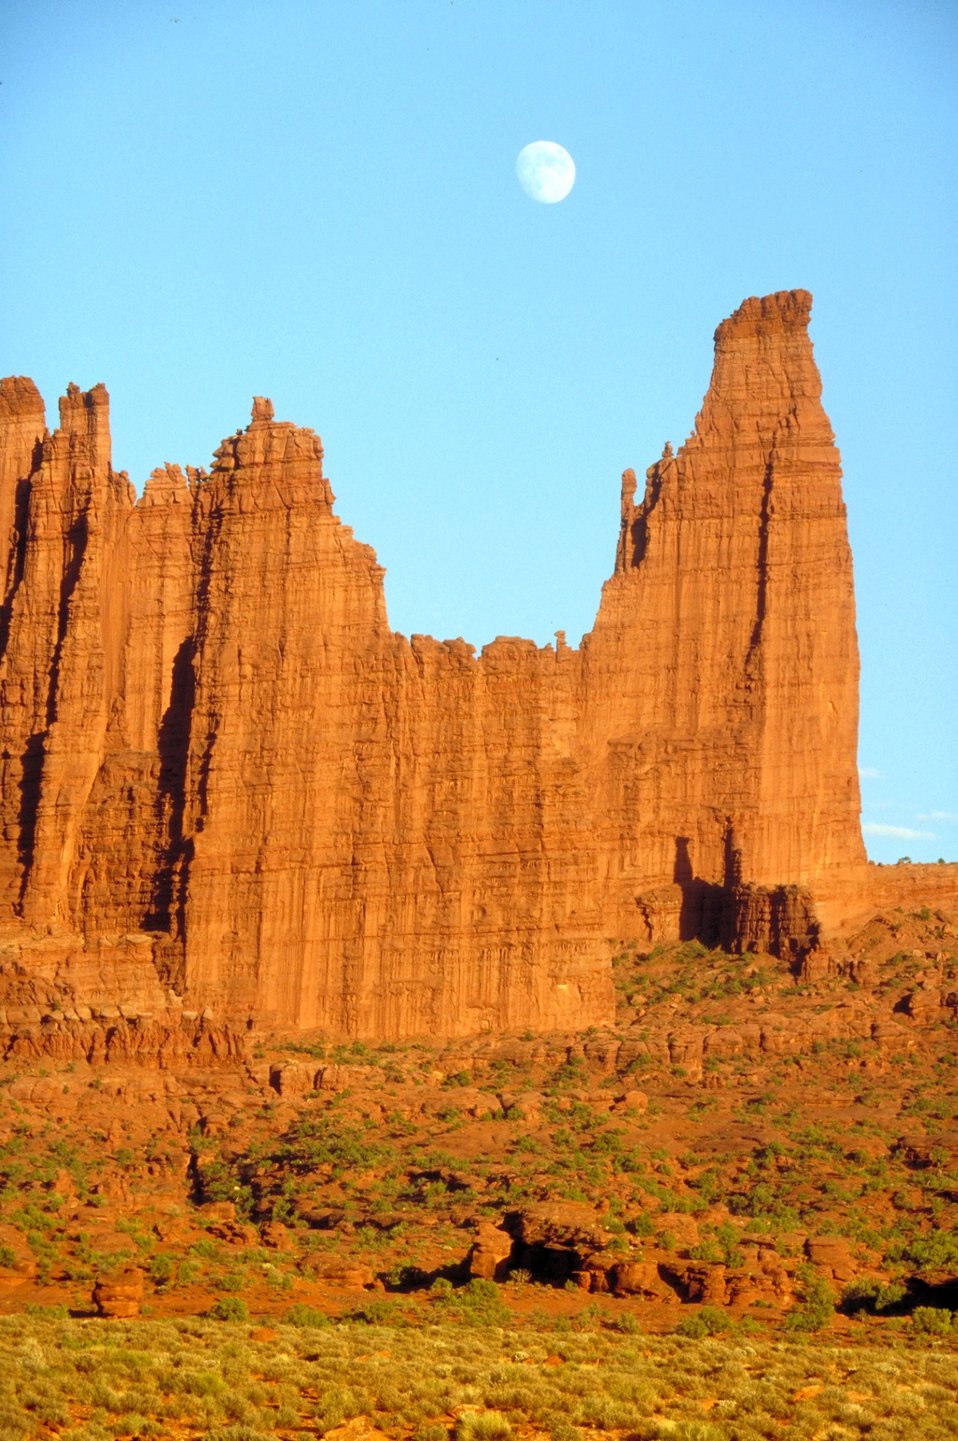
Fisher Towers along Highway 128, near Moab, Utah.